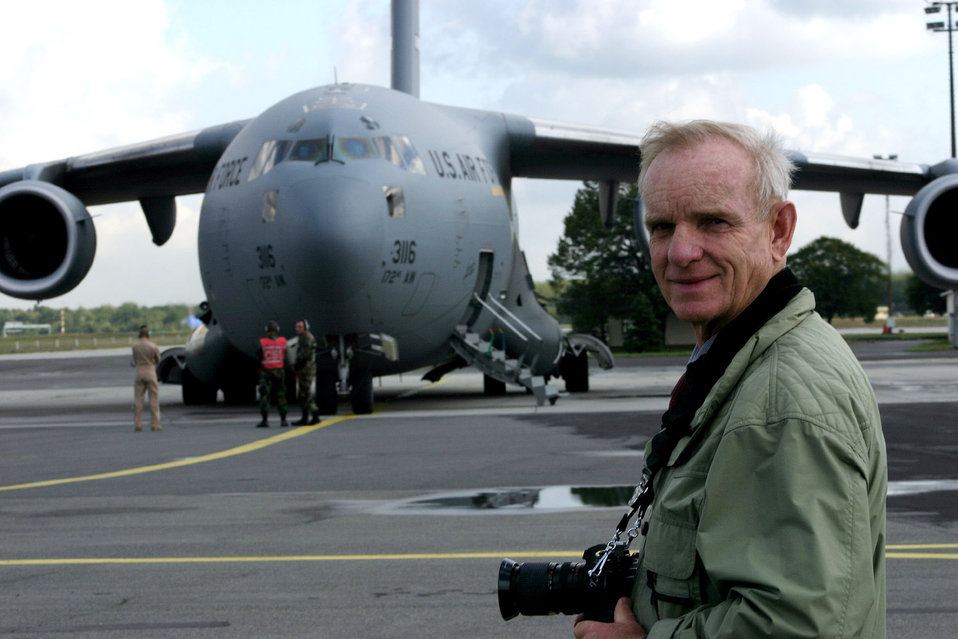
Rhein-Main mission ends, but not its legacy

RHEIN-MAIN AIR BASE, Germany -- Bob Keffer has been a fixture at this airlift base for 31 years. He has seen many historical events take place at the base. The last, on Sept. 28, was when he photographed the last C-17 Globemaster III airlift mission from here. The Rhein-Main mission ends Oct. 1.